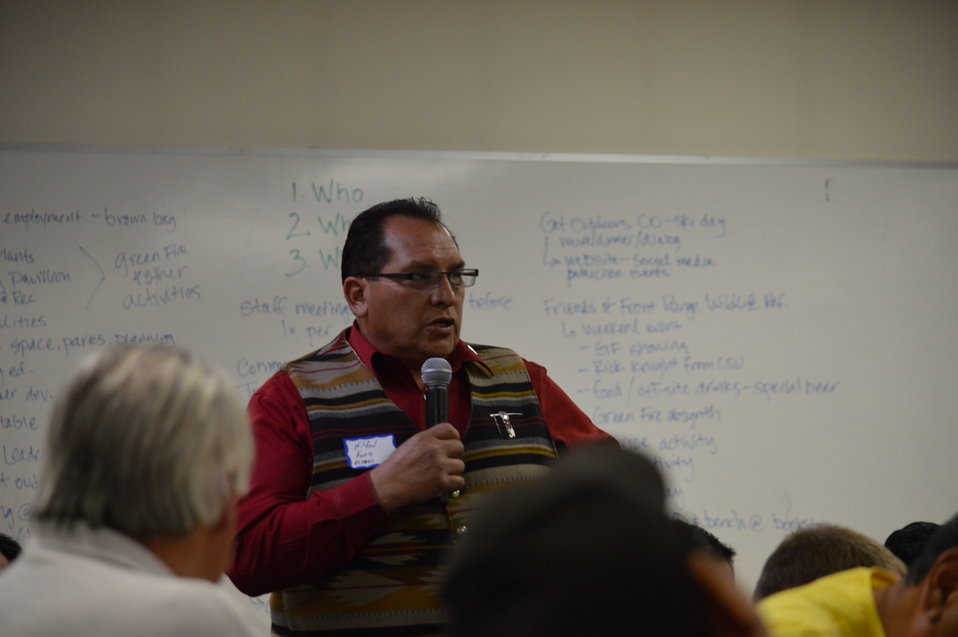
Eagle Summit III

Questions and comments at the Eagle Summit III in Denver, Colorado on March 20, 2014 at the Rocky Mountain Arsenal National Wildlife Refuge.